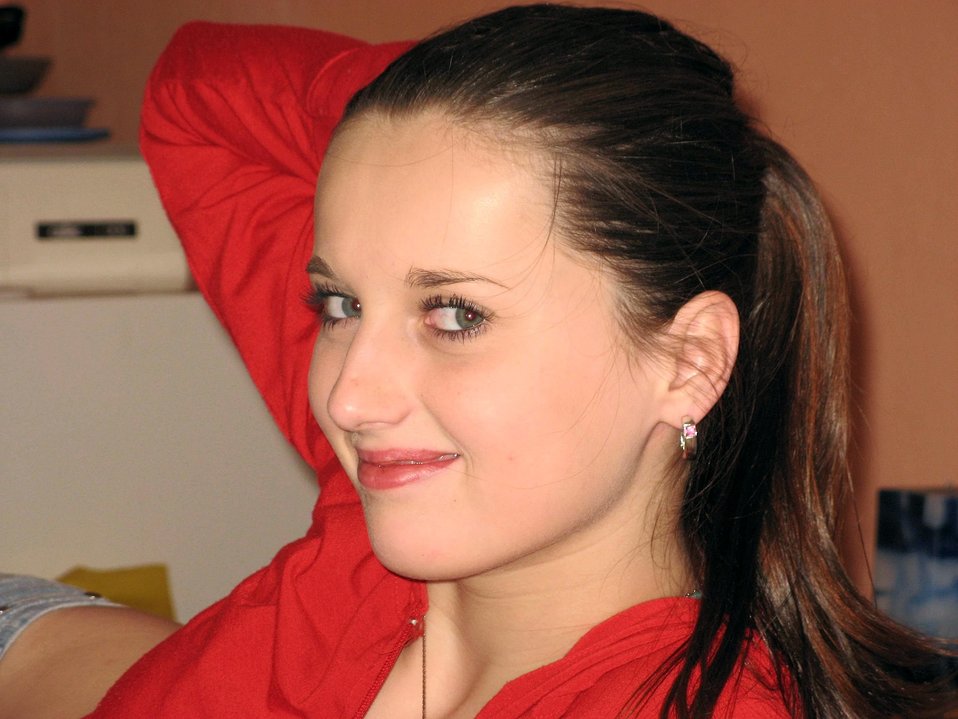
English:
Image title: Beautiful girl face Image from Public domain images website, http://www.public-domain-image.com/full-image/people-public-domain-images-pictures/female-women-public-domain-images-pictures/beautiful-girl-face.jpg.html